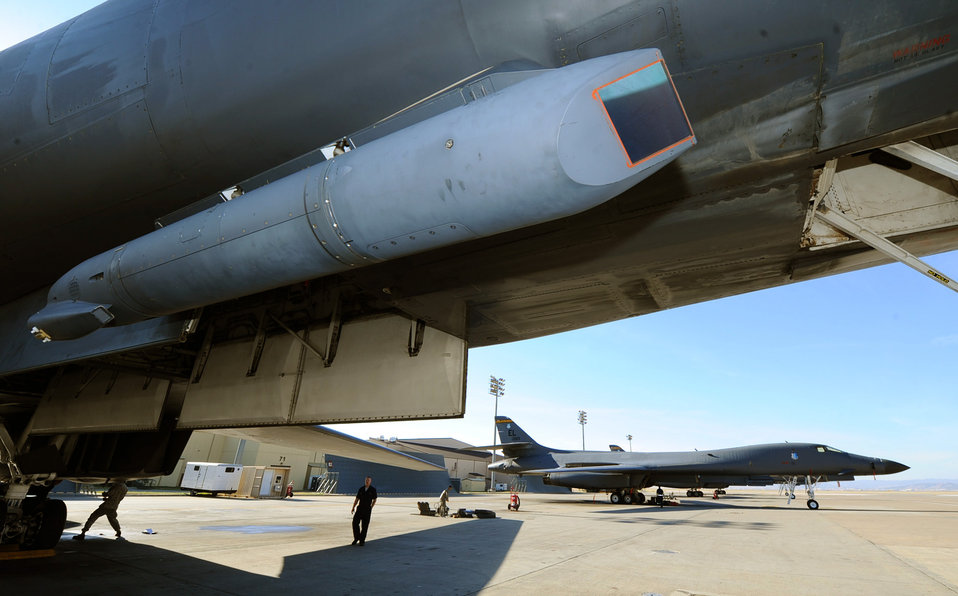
Eye in the sky

A B-1B Lancer with a Sniper advanced targeting pod is parked on the flightline Oct. 22, 2010, at Ellsworth Air Force Base, S.D. The pod is a long-range precision targeting system that supports the B-1's mission by providing positive target identification, autonomous tracking, coordinate generation and precise weapons guidance from extended standoff ranges supporting air to ground operations.